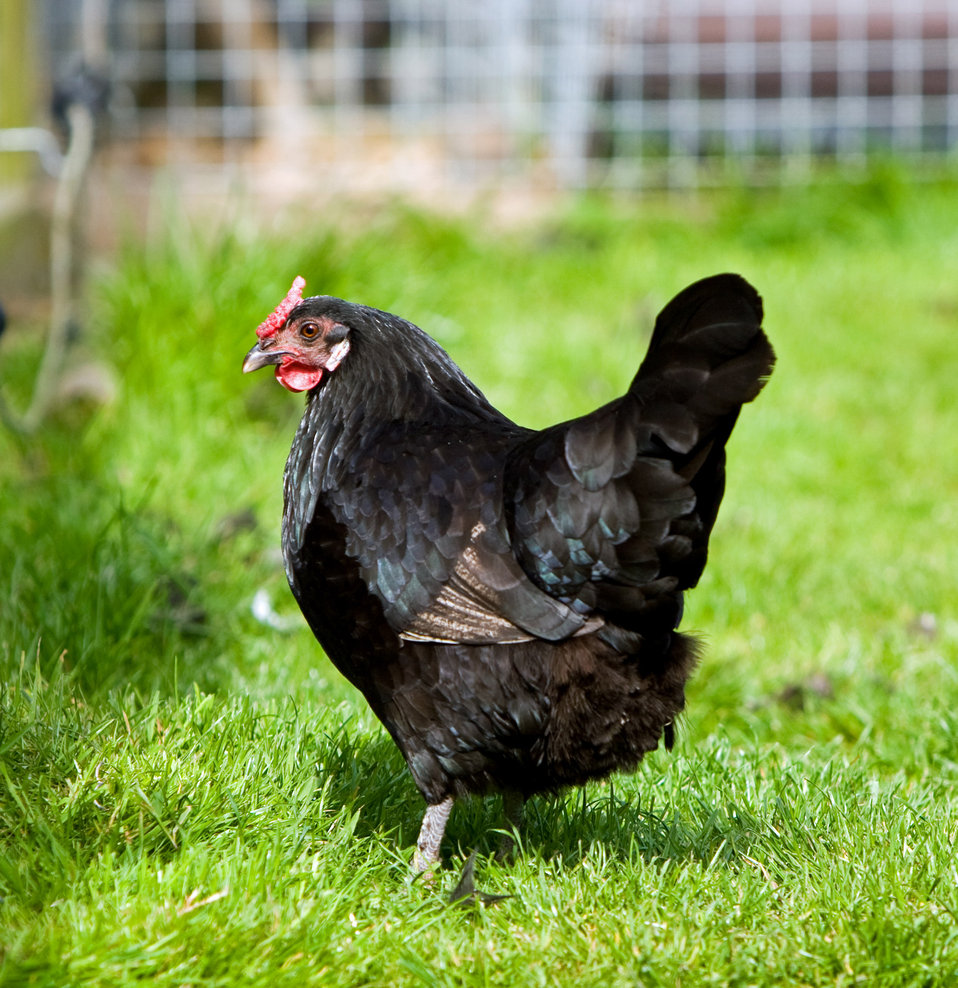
Black hen

Black chicken, hen bird.